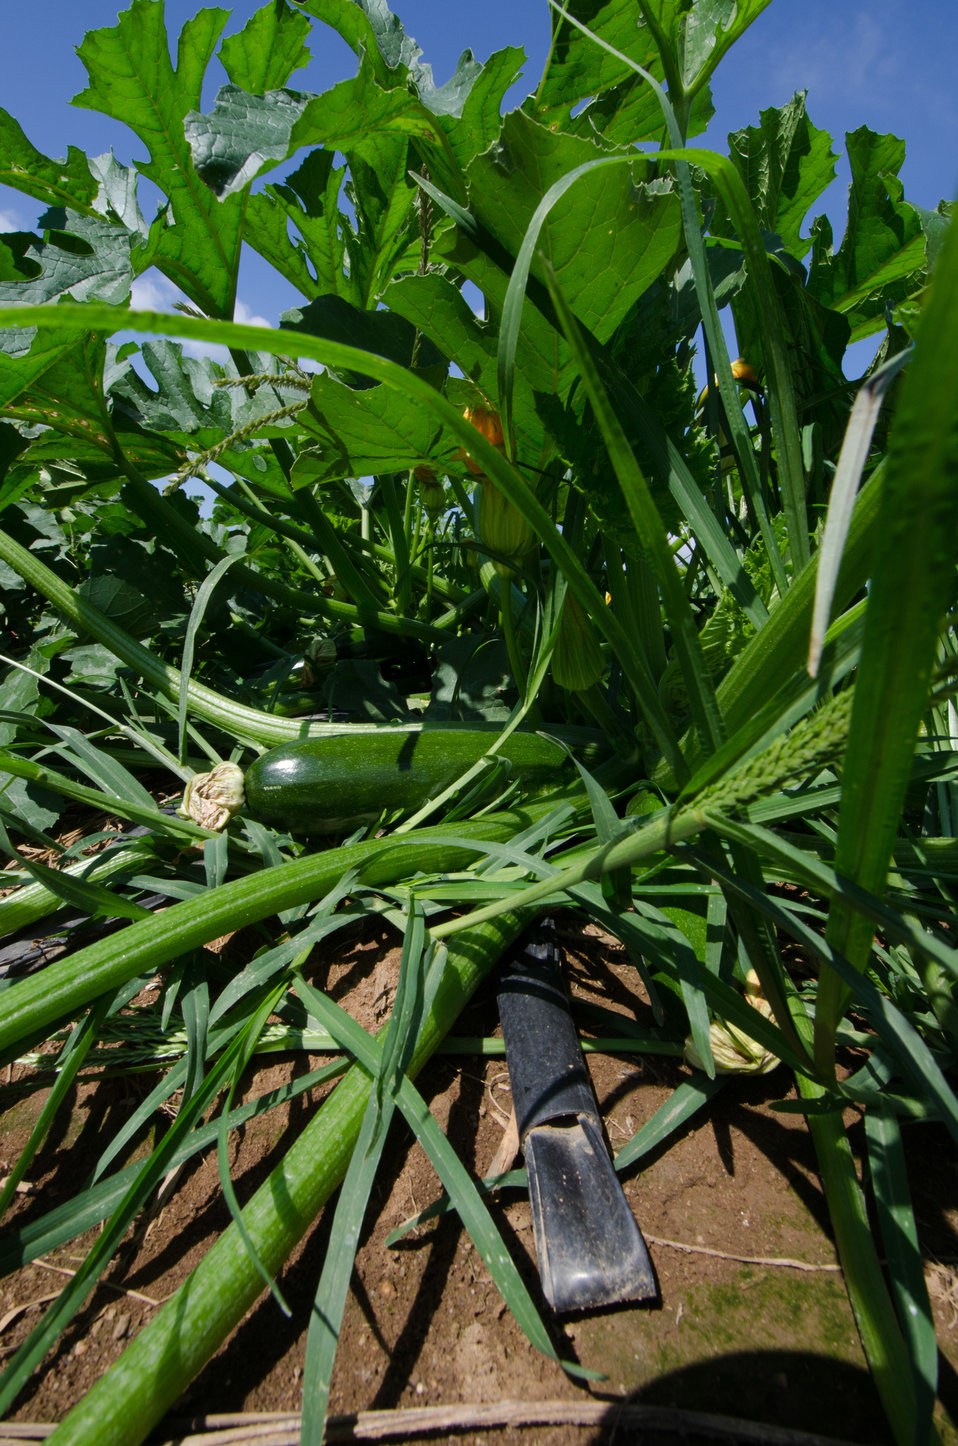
Kirby Farms third-generation family farm in Mechanicsville, VA, uses micro irrigation (drip watering) and plastic mulch (row covering) to efficiently grow green zucchini squash, on Friday, Sept 20, 2013. Water is pumped through a filtration/regulator system to flexible distribution pipes and hard connectors. Emitter hoses can be driven in where needed. Pressurized hoses emit water at a very slow rate near the base of the plants. Computers or timers provide additional controls. A micro irrigation system, also known as drip or trickle irrigation, is used to water directly to the plant root zone utilizing surface or subsurface applicators. For more information please see www.nrcs.usda.gov/Internet/FSE DOCUMENTS/nrcs141p2 024038...
Plastic sheeting is a form of mulch. It conserves soil moisture and reduces energy
use associated with irrigation, moderates soil temperature, provide erosion control, suppresses weed growth, facilitates the establishment of vegetative cover, improves soil quality, and reduces airborne particulates.